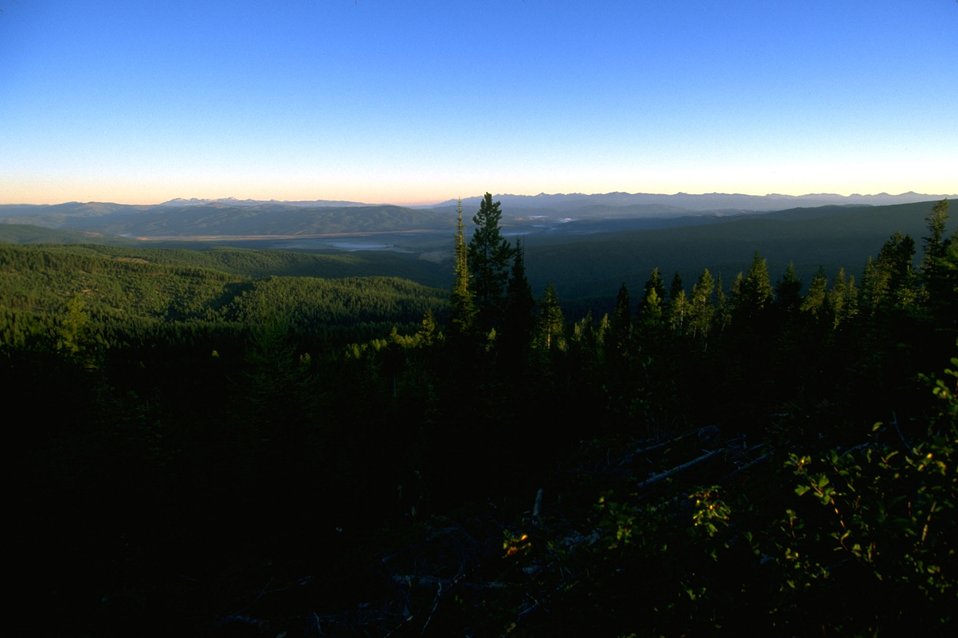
Garnet Back Country Byway--view from overlook